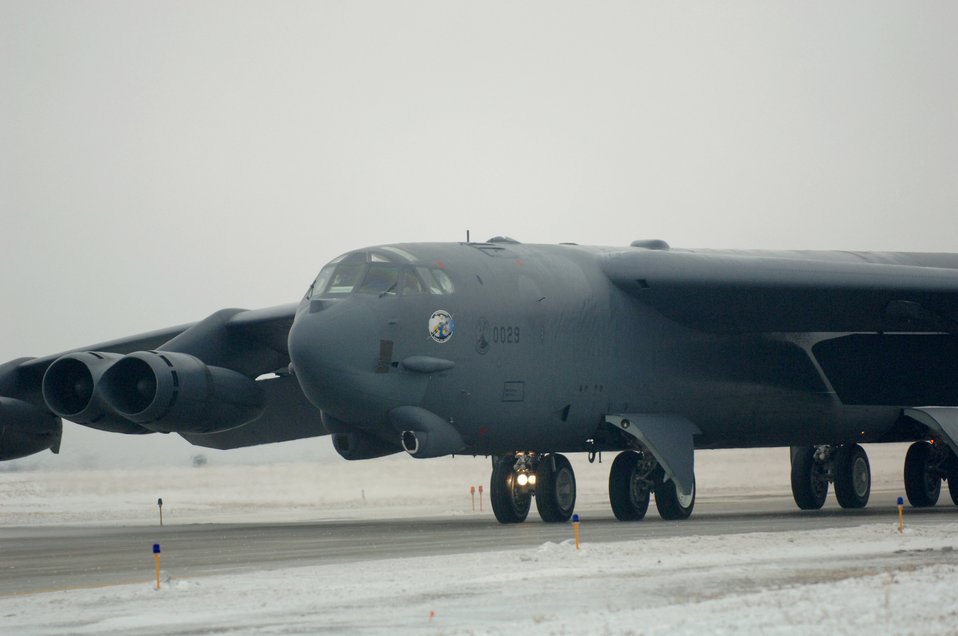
On alert

A B-52 Stratofortress taxis during an alert exercise at Minot Air Force Base, N.D., Monday, March 6, 2006. Alert generation exercises are held to ensure the base can respond rapidly to national objectives.